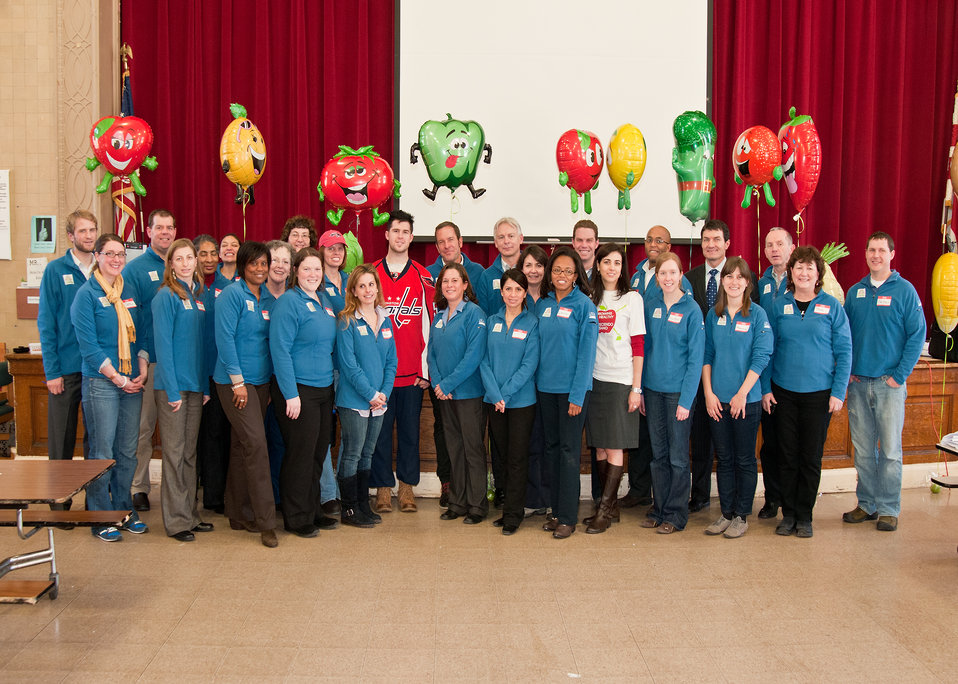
Mike Green, Washington Capitals and 2011 NHL All-Star defenseman (red shirt), Janeece Docal (white shirt), Principal of Powell Elementary School, Alan May (third from right) along with teachers, parents, United States Department of Agriculture, Landscape Architects and United States Department of Agriculture, The People’s Garden employees and volunteers held a workshop to design a garden at the Powell Elementary School, in Washington, D.C., on Thursday, February 10, 2011. Children from pre-Kindergarten to Fourth Grade participated in the design process. Docal said, “At Powell Elementary School we are very excited about The People’s Garden initiative in partnership with USDA and the Washington Capitals, This will be a collaborative effort in which the parents, staff and students will unite to design the garden for our Powell campus and foster pride in beautifying and sustaining it. It will create teaching opportunities and authentic learning projects for all our scholars, age’s three to fourth grade–about the environment, biology, mathematics and related literature. It also will promote our health and wellness initiatives and enable social and cultural connections among our multicultural Powell community.”